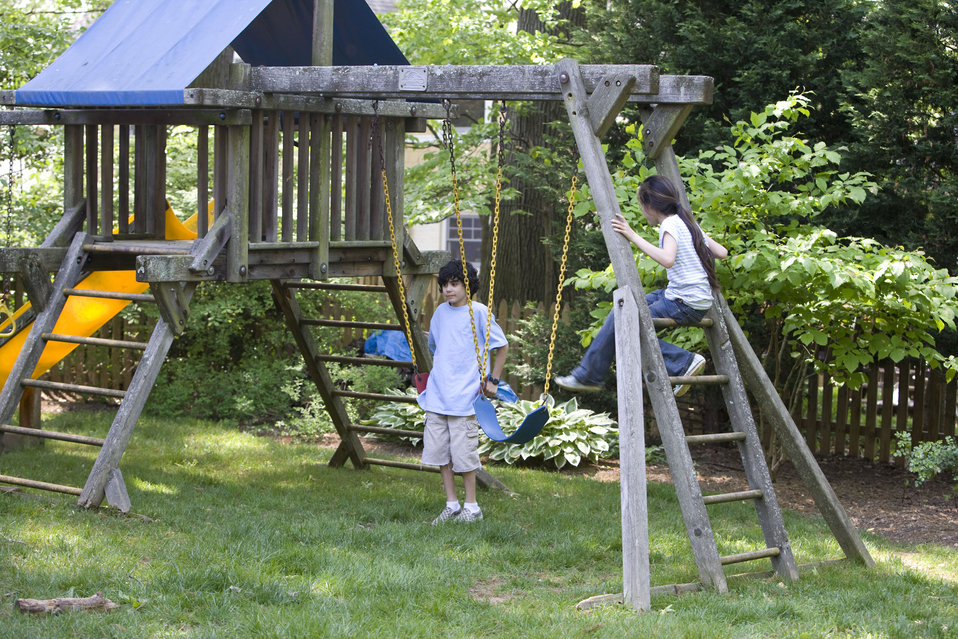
Children love playing outside, and these children were thoroughly enjoying their wooden swing set, and all were having fun in the fresh outdoor air, and the beautiful weather. It's important to note that older wooden playsets may have been treated with arsenic and/or creosote, and therefore, parents need to know if these chemicals were used in their manufacture.